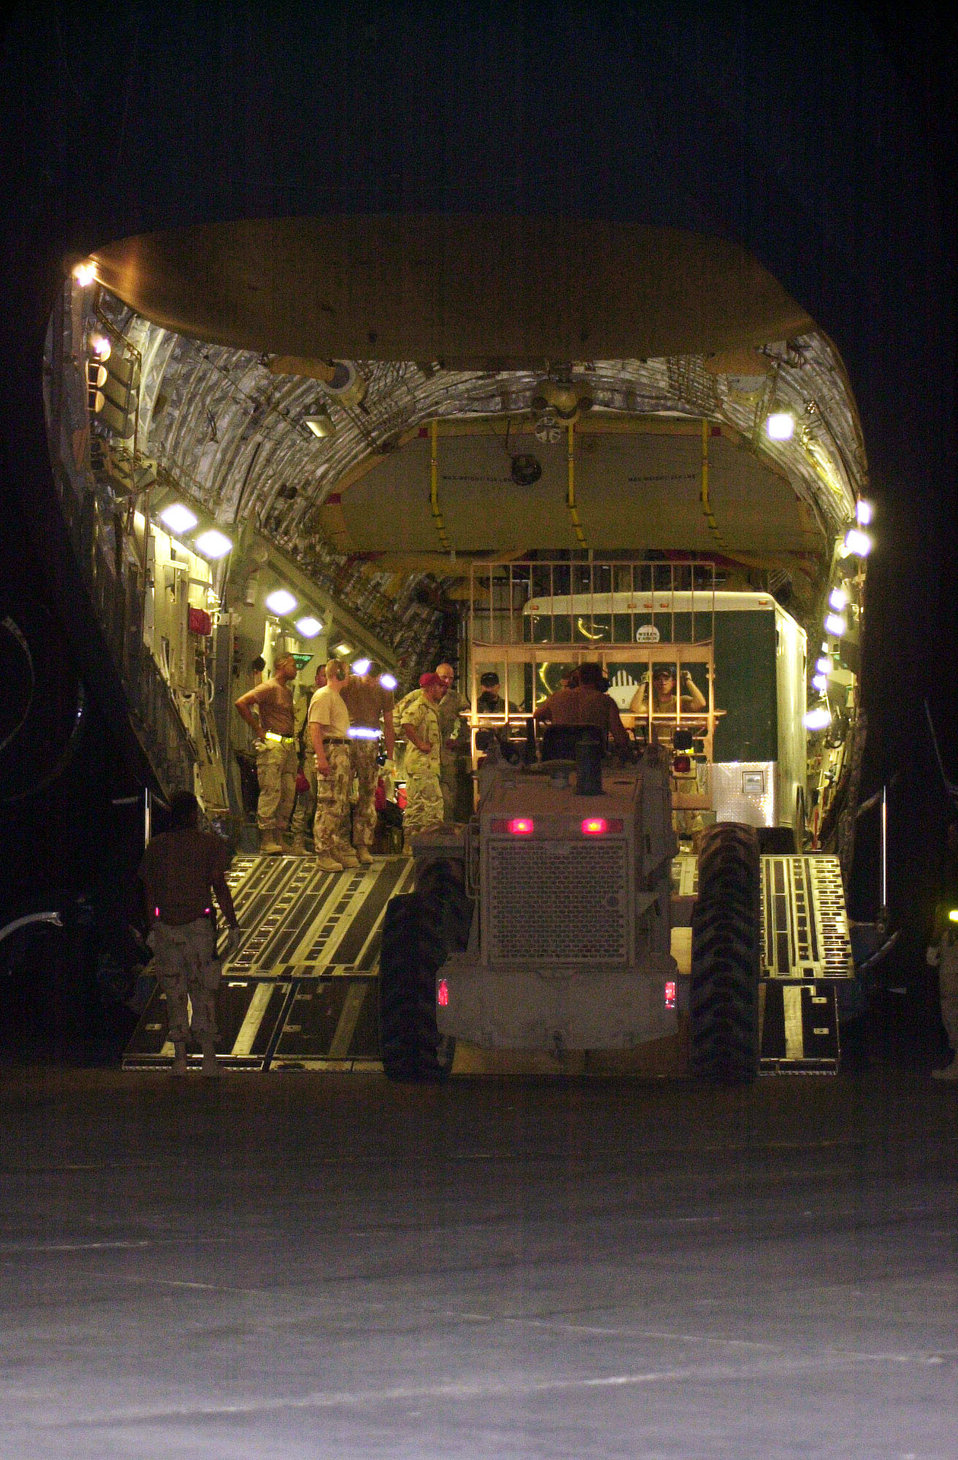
Red Horse unloads

TALLIL AIR BASE, Iraq -- Airmen unload one of three planes of equipment and materials for the 1st Expeditionary Red Horse Group on June 26. The engineering team will spend three weeks repairing the runways so heavy aircraft can land here.